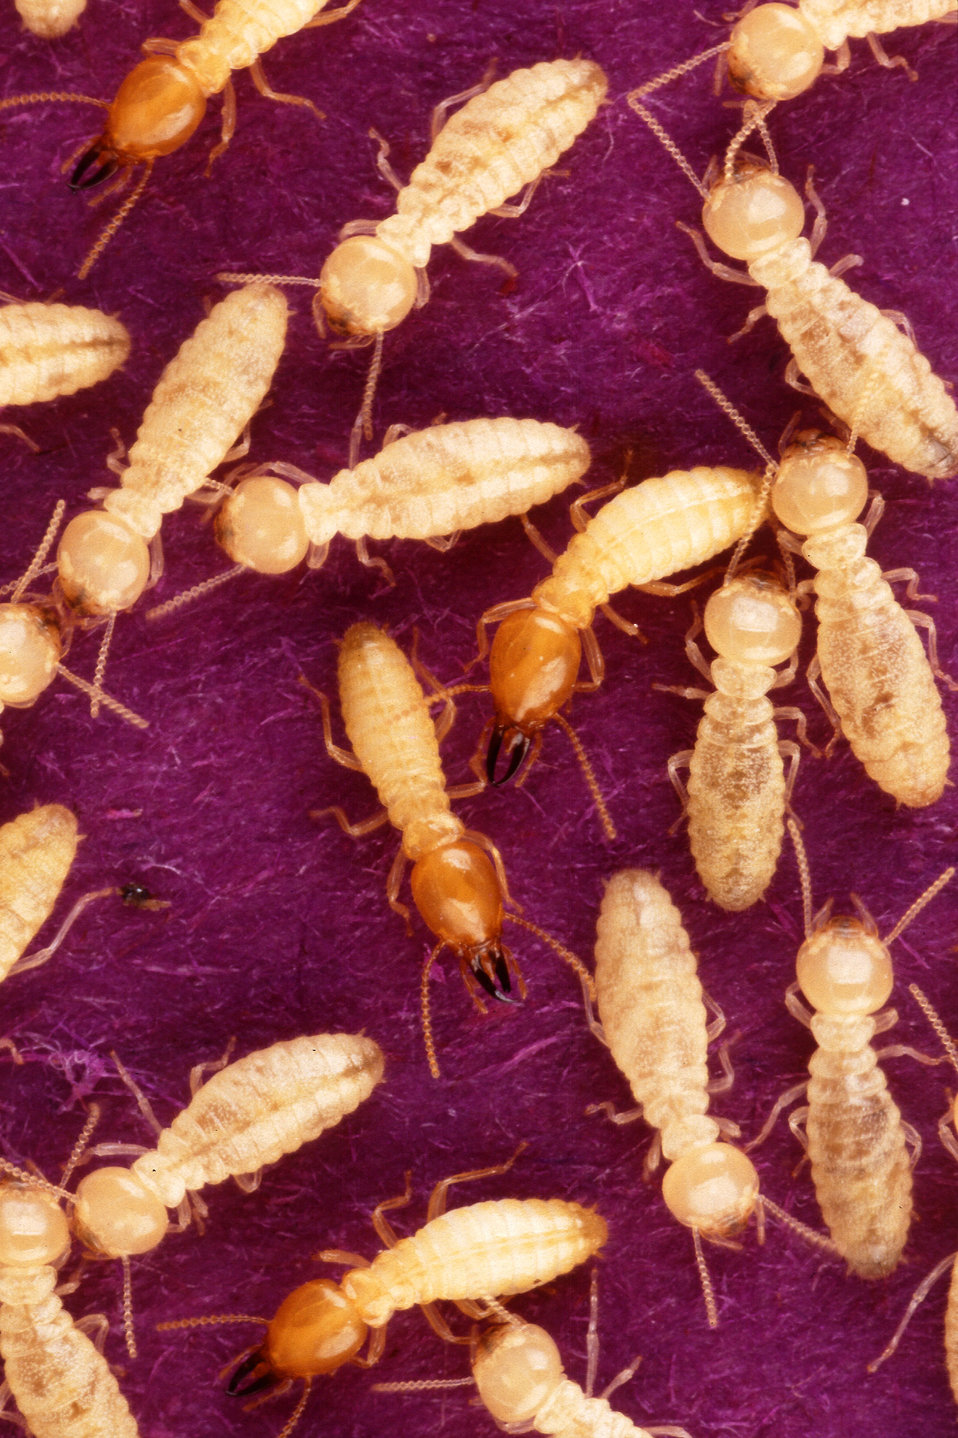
Formosan subterranean termites are feed on Sudan-red-stained filter paper. Tracking the termites that have been stained with this dye allows researchers to estimate their foraging range and population numbers.